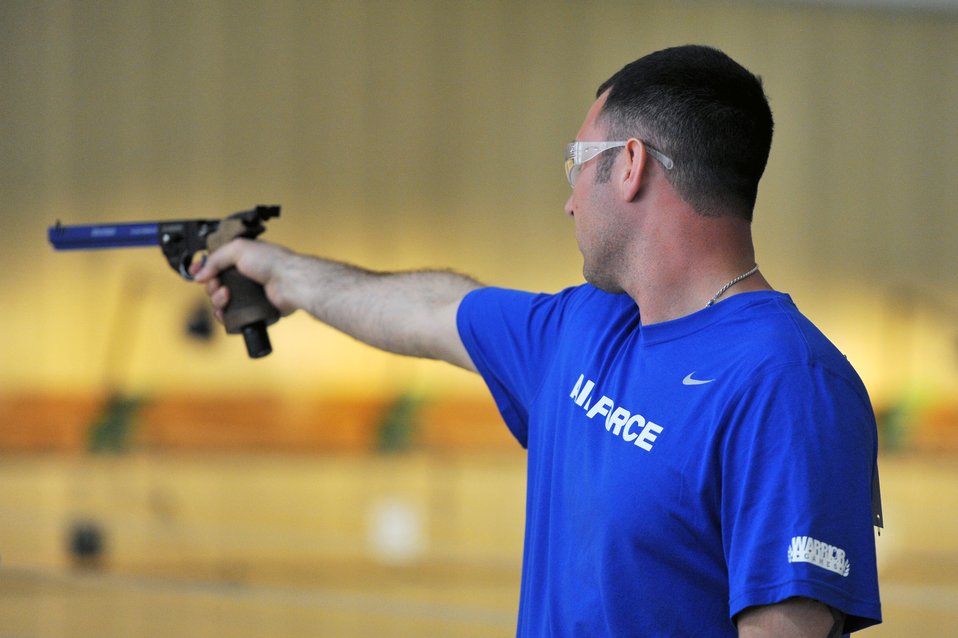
prelims shooting competition

Christopher D'Angelo takes aim in the shooting competition of the 2011 Warrior Games May 17, 2011, at the U.S. Olympic Training Center in Colorado Springs, Colo. More than 200 wounded warriors from all the military services are competing in paralympic-style athletic events May 16 through 21.